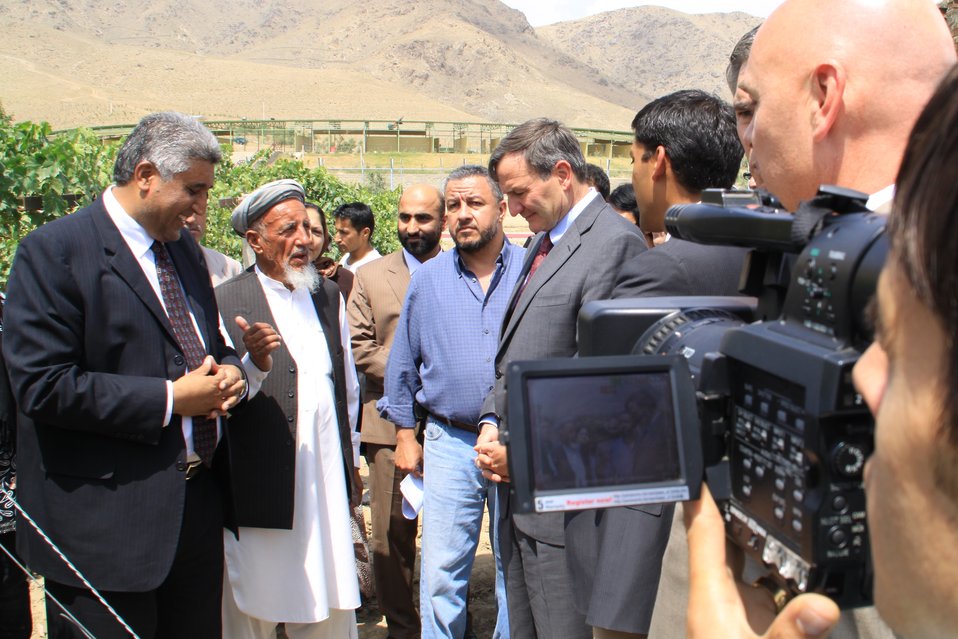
Badam Bagh Farm